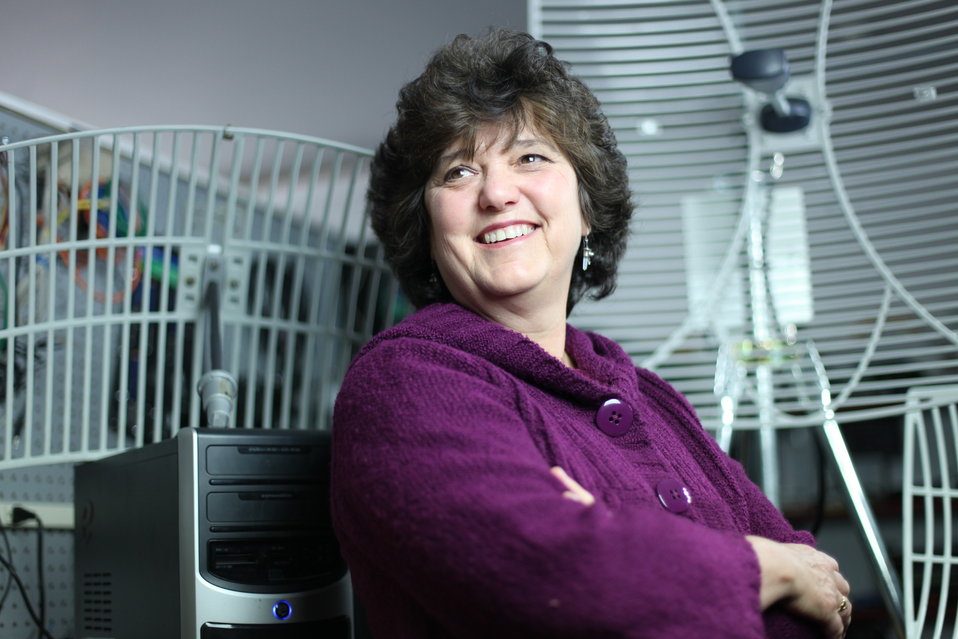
Susan Corbett1

Susan M. Corbett owns and operates Axiom Technologies, a telecommunications company headquartered in Machias, ME. Axiom was able to expand and purchase its own building with funding support through the U.S. Department of Agriculture's (USDA) Rural Development (RD) Intermediary Relending Program (IRP).